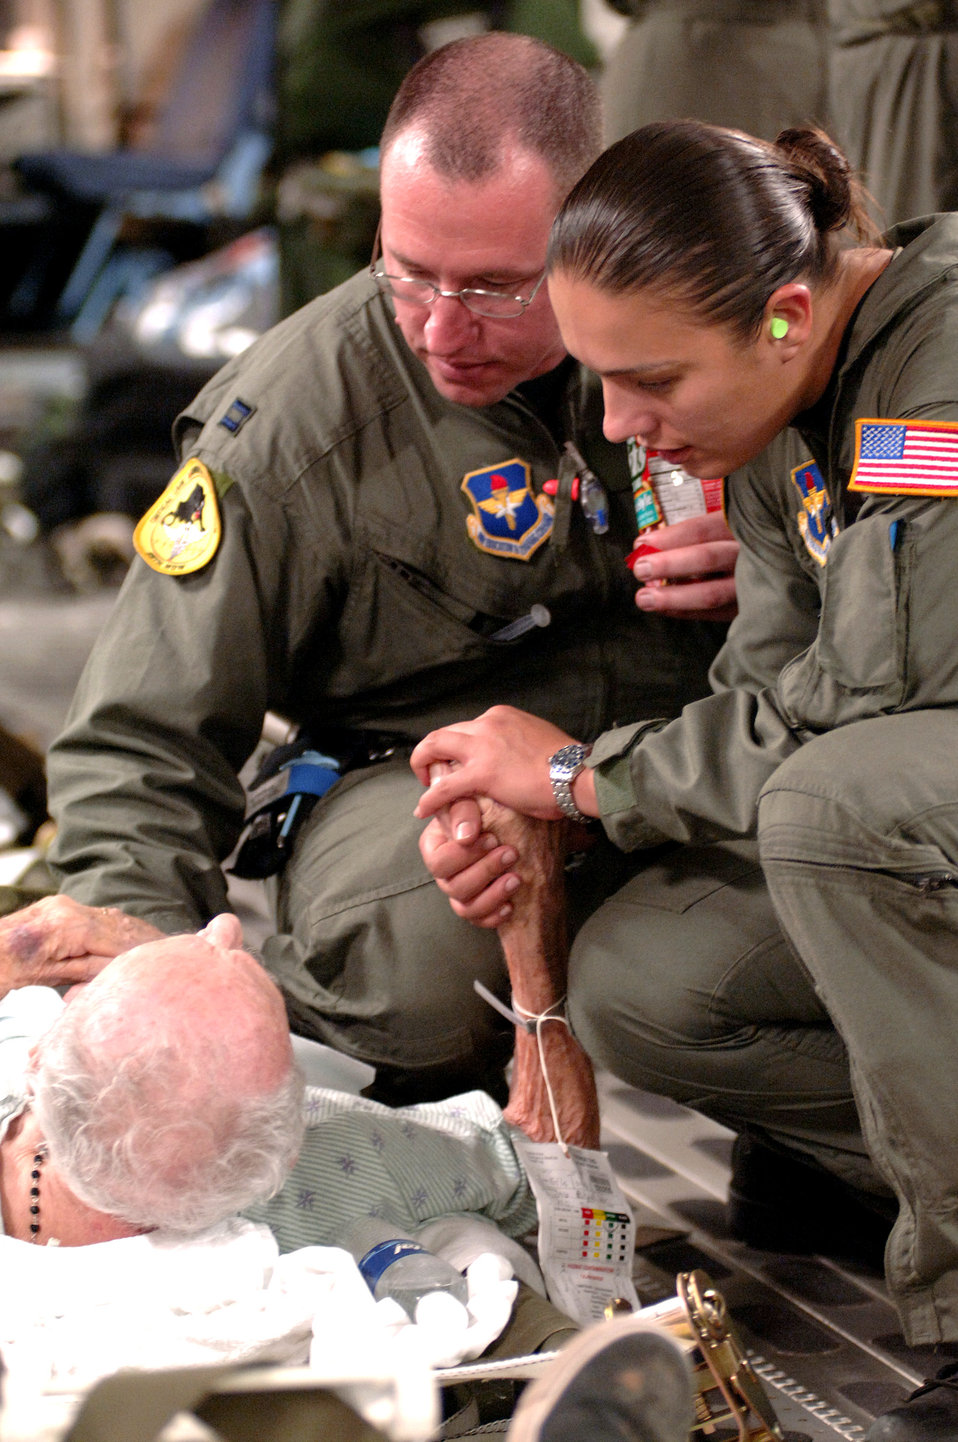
Medical wing stands ready for hurricane response

Capt. Mike Dixon and Staff Sgt. Lina Gamez provide a hand to hold and reassuring words to an elderly patient during the evacuation for Hurricane Katrina on Sept. 1, 2005, in New Orleans. Captain Dixon is an intensive care nurse and Sergeant Gamez is a respiratory therapist with the 59th Medical Wing at Lackland Air Force Base, Texas.